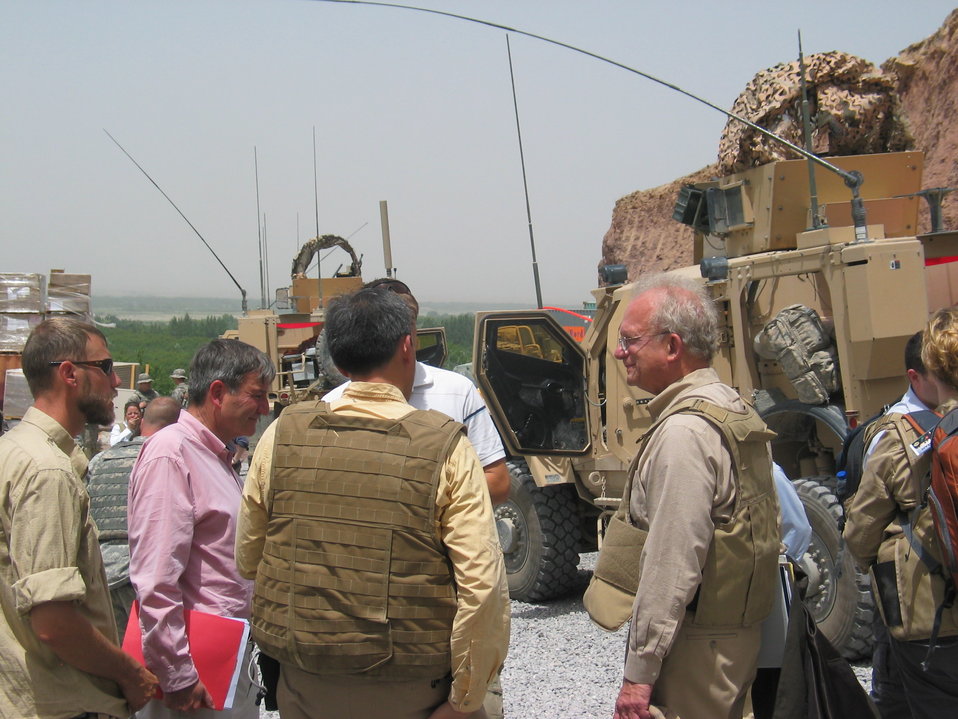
CODEL Berman